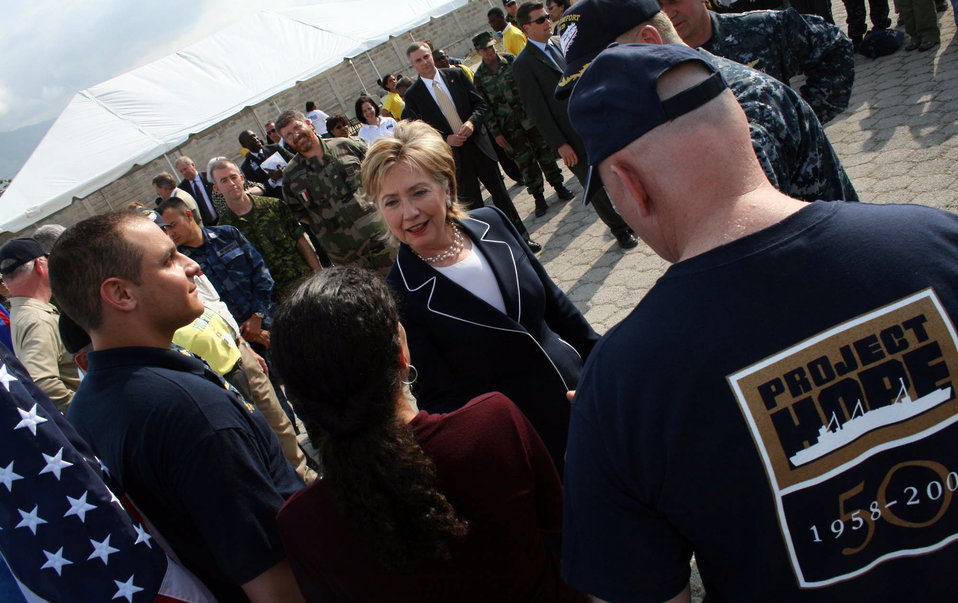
Secretary Clinton Visits Comfort Clinic in Haiti

U.S. Secretary of State Hillary Rodham Clinton greets Dr. Carla Shonenberg from El Salvador (a volunteer staying on the USNS Comfort) outside of the Comfort Clinic at Cite Soleil, Haiti April 16, 2009.